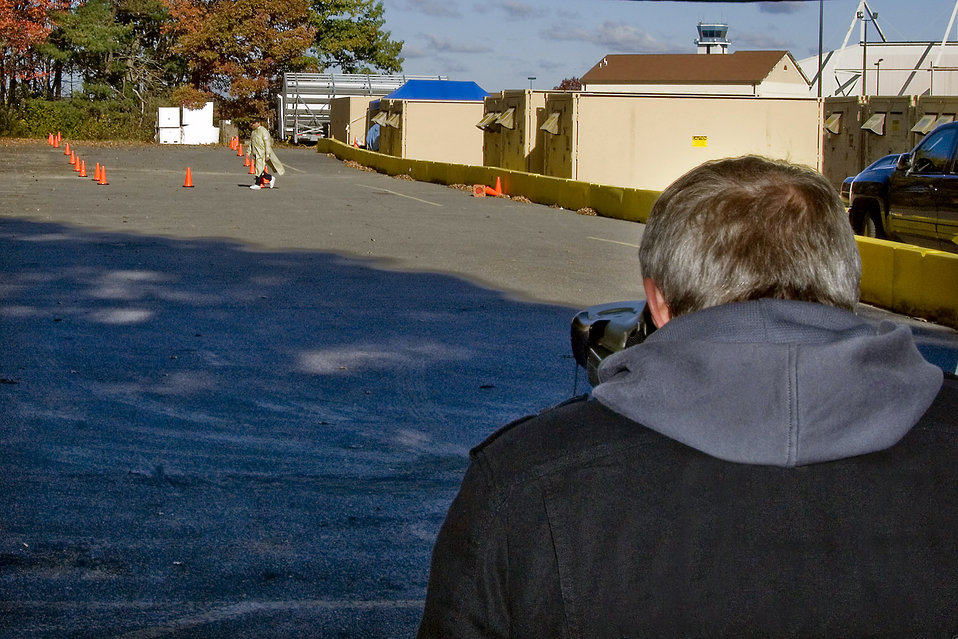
Hanscom team works to lower person-borne IED threat

Mike Nolan, a business development manager for Vectronix Inc., uses infrared technology to look for simulated improvised explosive devices being carried by test subjects at Hanscom Air Force Base, Mass., Oct. 23. The tests being conducted by the Air Force Counter-IED Office at Hanscom are expected to pinpoint technologies that can reduce suicide bombing threats in theater.